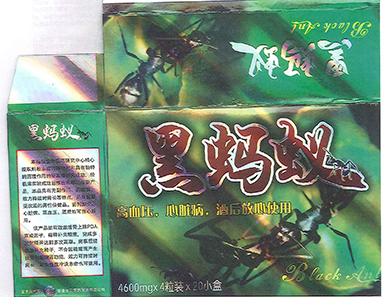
RECALLED – Dietary Supplement

April 1, 2014 – Product Recall – Nova Products, Inc. Issues Voluntary Nationwide Recall of Dietary Supplements with Undeclared Active Pharmaceutical Ingredients.